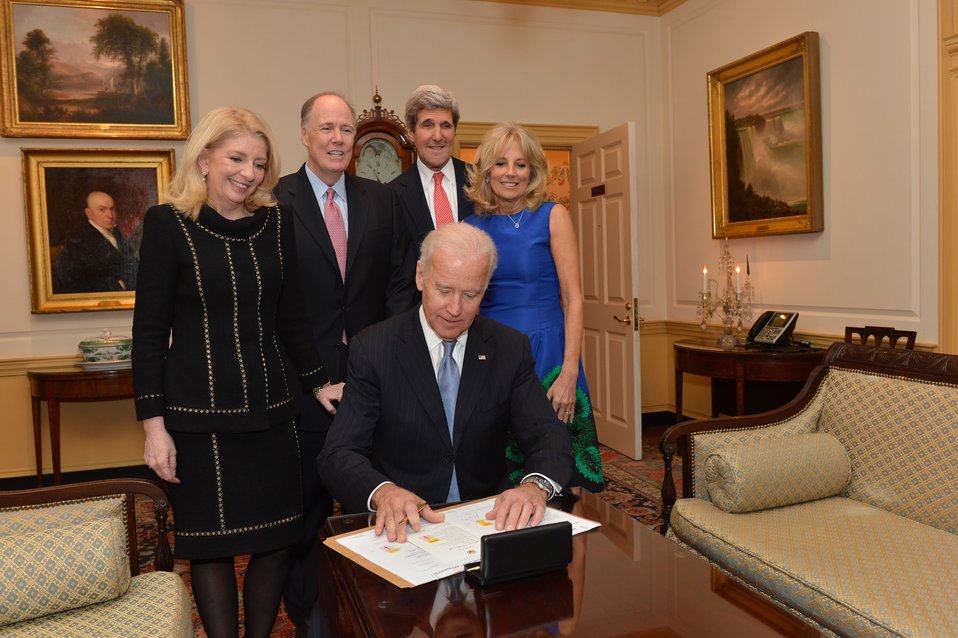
Vice President Biden Signs the Appointment Papers for Ambassador Russell

With U.S. Secretary of State John Kerry and her family looking on, Vice President Joe Biden signs the appointment papers for Catherine Russell to become the U.S. Ambassador-at-Large for Global Women’s Issues at the U.S. Department of State in Washington, D.C., on January 17, 2014.